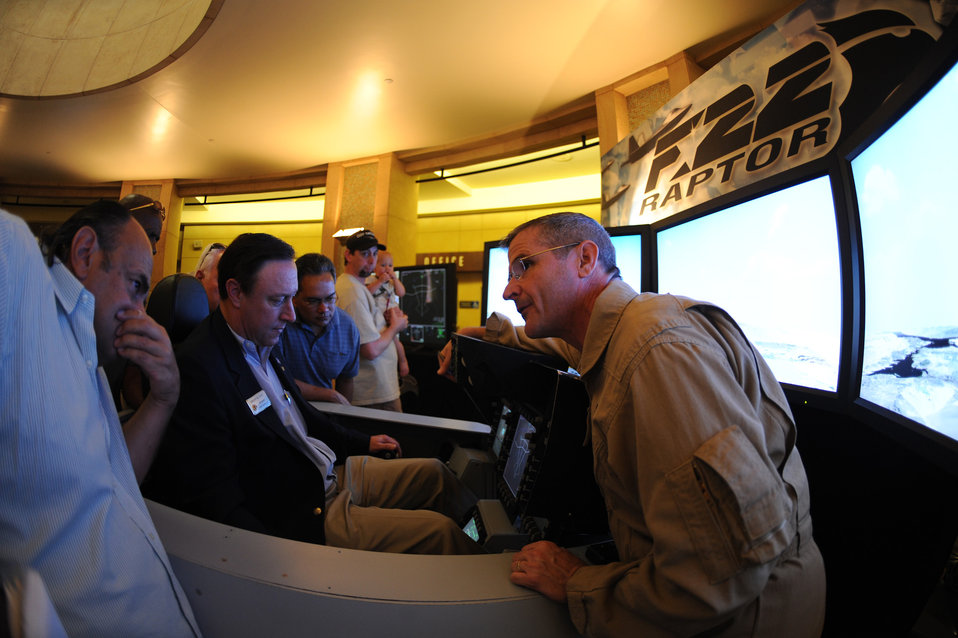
Air Force Week Los Angeles

Dave Cooley explains to Grant Ivey how the F-22 Raptor simulator operates during the Air Force Expo at Hollywood and Highland Boulevard in Los Angeles on Nov. 14. Air Force Week Los Angeles is Nov. 14 to 21, and has events throughout the area. Mr. Cooley is an F-22 Raptor test pilot for Lockheed Martin, and Mr. Ivey is the president of Navy Days-LA.